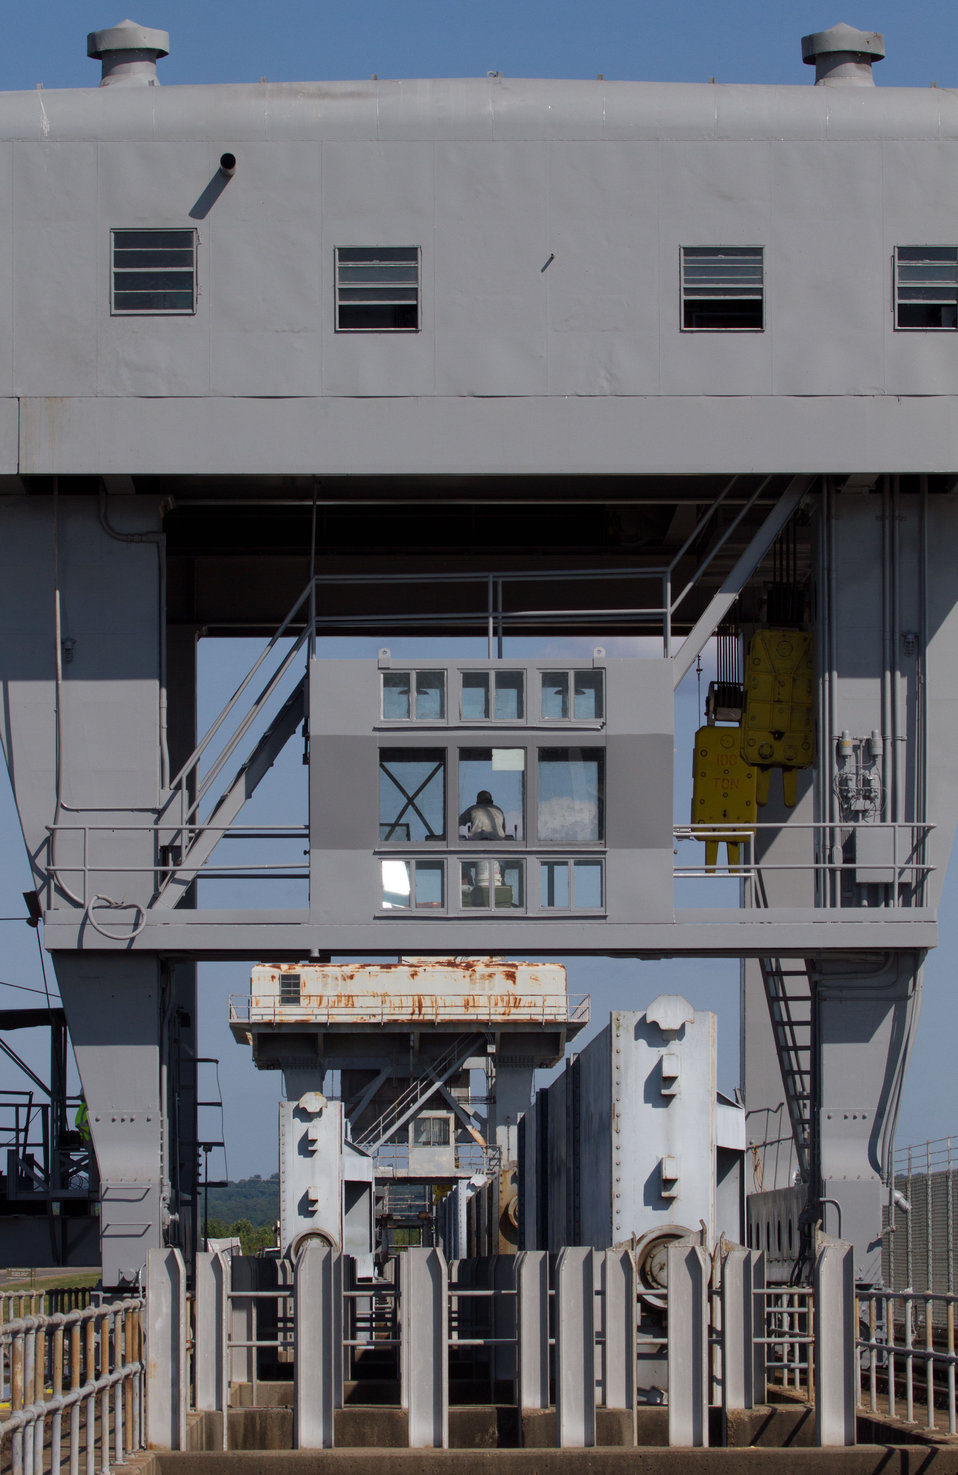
The Army Corps of Engineers conduct daily depth measurements along the intake side of The Old River Control Complex, Low Sill Structure in Concordia Parish, LA, on Tuesday, May 17, 2011. The measurements tell both the condition along the intake “ramp” and allow them to calculate the flow through the gates. The Old River Control Complex is designed to channel as much as 30 percent of the Mississippi River’s flow into the Gulf of Mexico through it’s eleven 44-foot wide gates across 566 foot span that separates the Mississippi and (the outflow channel to the) Red and Atchafalaya Rivers. Rated at 300,000 million gallons per minute (note: That’s more than seven Olympic sized swimming pools every second). Although this helps the Mississippi River, it (along with other concerns, puts back pressure on the Red River and other waterways, possibly causing some flooding of farms to avoid a catastrophic breech of the levee system. Most of the gates have been opened by a rolling crane and stored in racks. Debris, some as larger than telephone polls make their way through the gates and pool in eddies. The constant motion and contact with other objects, strip trees of their branches and bark. 20-30 pound Carp can frequently be seen jumping out of the white water.